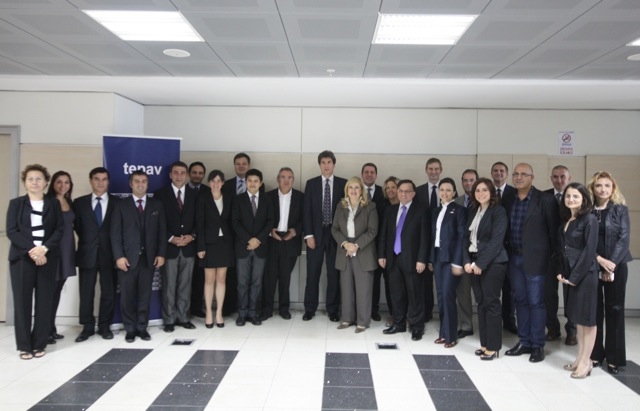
Assistant Secretary Fernandez Participates in Meetings

Assistant Secretary of State for Economic, Energy and Business Affairs Jose Fernandez participates during his visit to Ankara, Turkey, October 4, 2011.